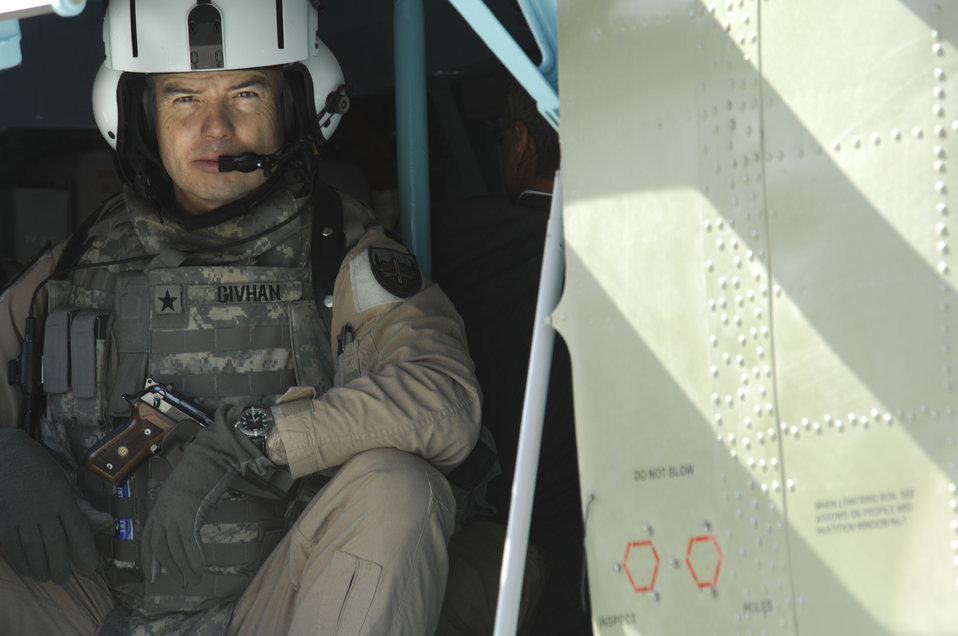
Importance of airpower for Afghanistan

Brig. Gen. Walter D. Givhan, Combined Airpower Transition Force commander, waits at the airport in Kabul, Afghanistan, to launch as a passenger on an Afghan National Army Air Corps MI-35 attack helicopter. The mission will be the first time in more than eight years that an Afghan aircraft has fired the 12.7mm nose gun and 57mm rockets. As training and capabilities grow for the ANAAC, this will allow them to provide close-air support to the Afghan National Armed Forces.